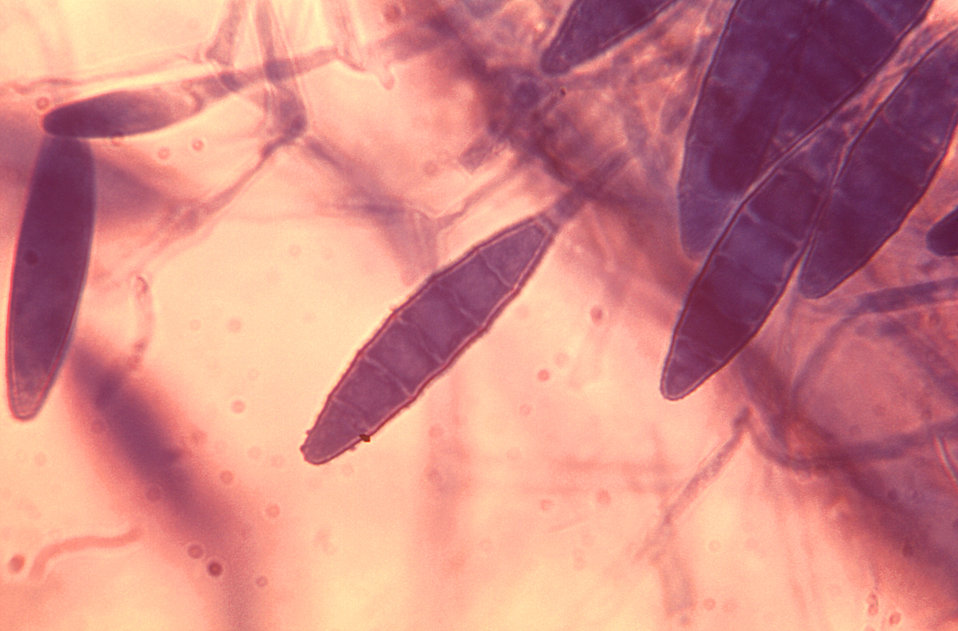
Under a high magnification of 900X, this photomicrograph depicted some of the ultrastructural features of numerous oblong-shaped Microsporum gypseum macroconidia that had been found in a soil isolate that originated in France.